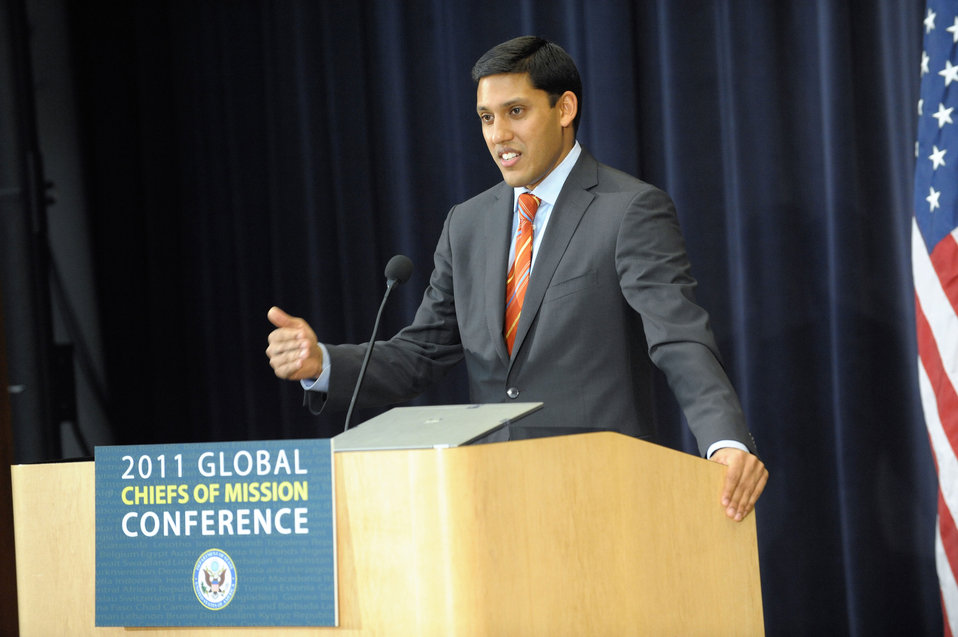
USAID Administrator Shah Delivers Remarks

USAID Administrator Rajiv Shah delivers remarks at the 2011 Global Chiefs of Mission Conference at the U.S. Department of State in Washington, D.C., on February 2, 2011.